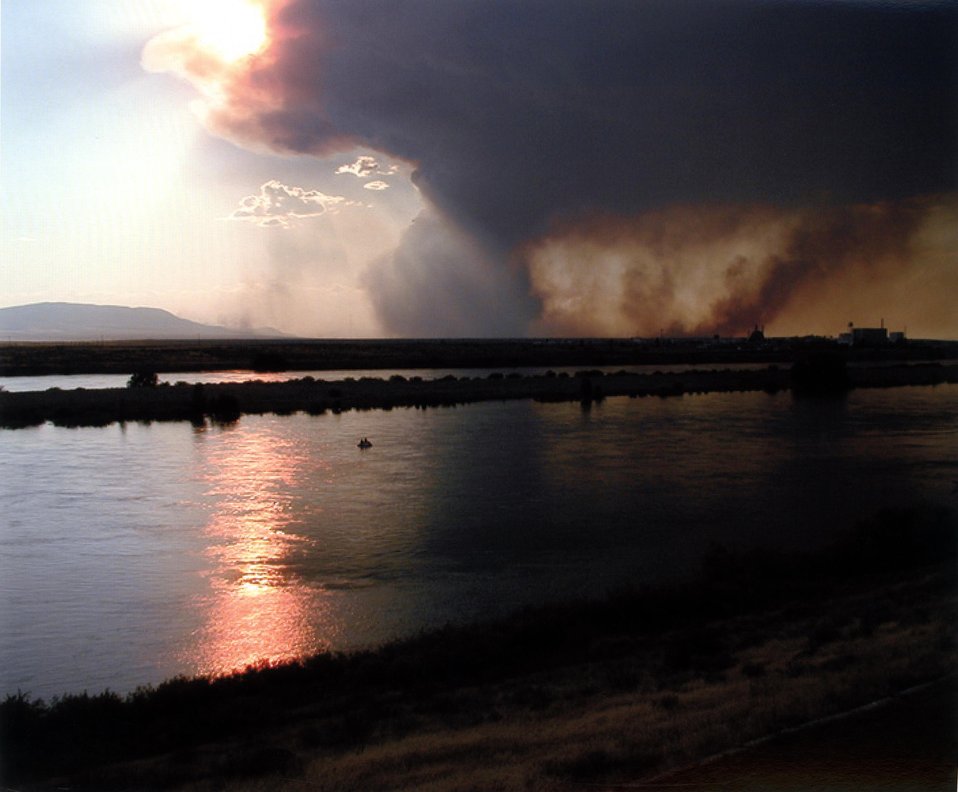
Smoke drifting from Hanford fire, July, 2000.